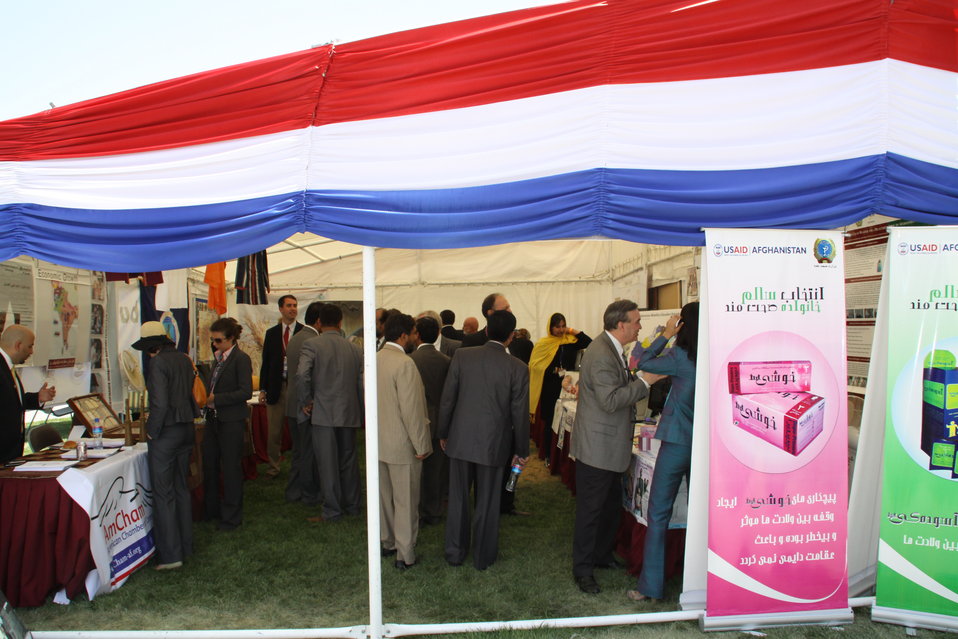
Kabul Official July 4th Celebration